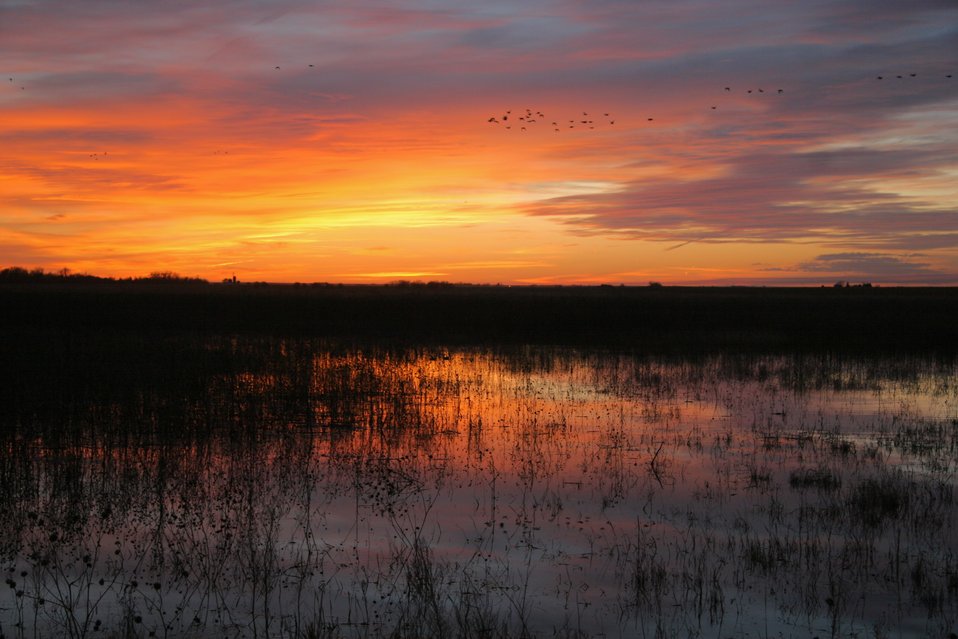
Sunset at Funk WPA, NE

Sunset on a Rainwater Basin wetland.

Taken: February 22, 2011 at Funk Waterfowl Production Area, NE.

Credit: Jeff Drahota / USFWS

Photo Contest Entry #172